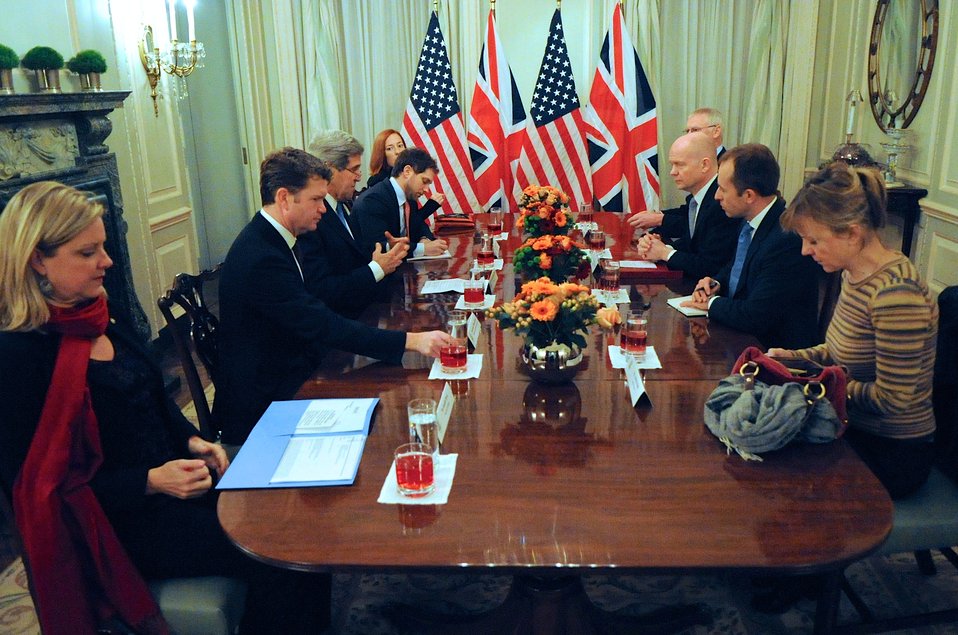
Secretary Kerry Holds Bilateral Meeting With British Foreign Secretary Hague

U.S. Secretary of State John Kerry and British Foreign Secretary William Hague hold a bilateral meeting at Winfield House, the ambassador's official residence, in London, United Kingdom, on November 24, 2013.